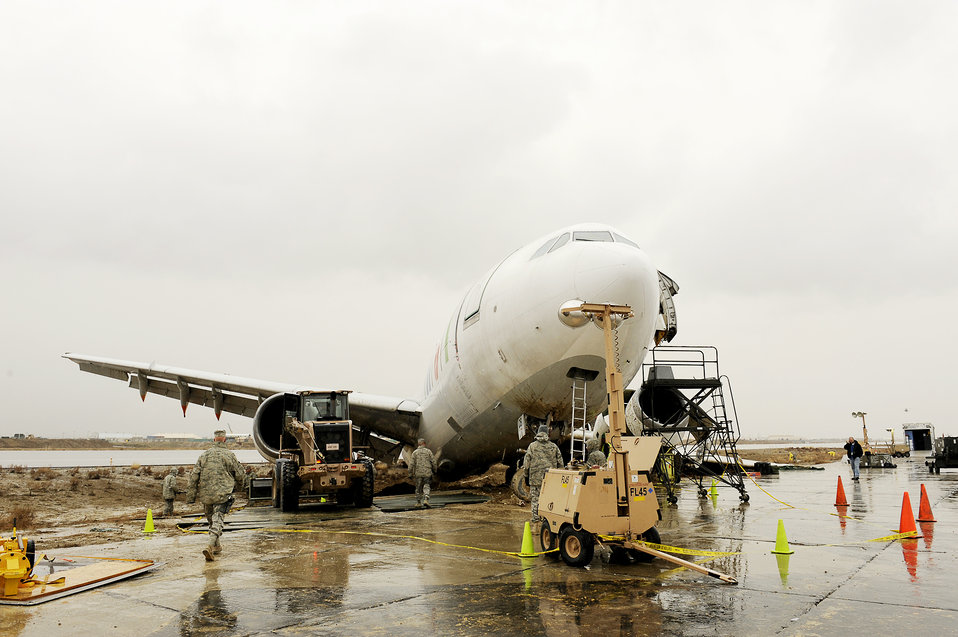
Bagram Airmen respond to emergency aircraft landing

An Airbus A300 rests on the taxiway after its crew preformed an emergency landing March 3, 2010, at Bagram Airfield, Afghanistan.